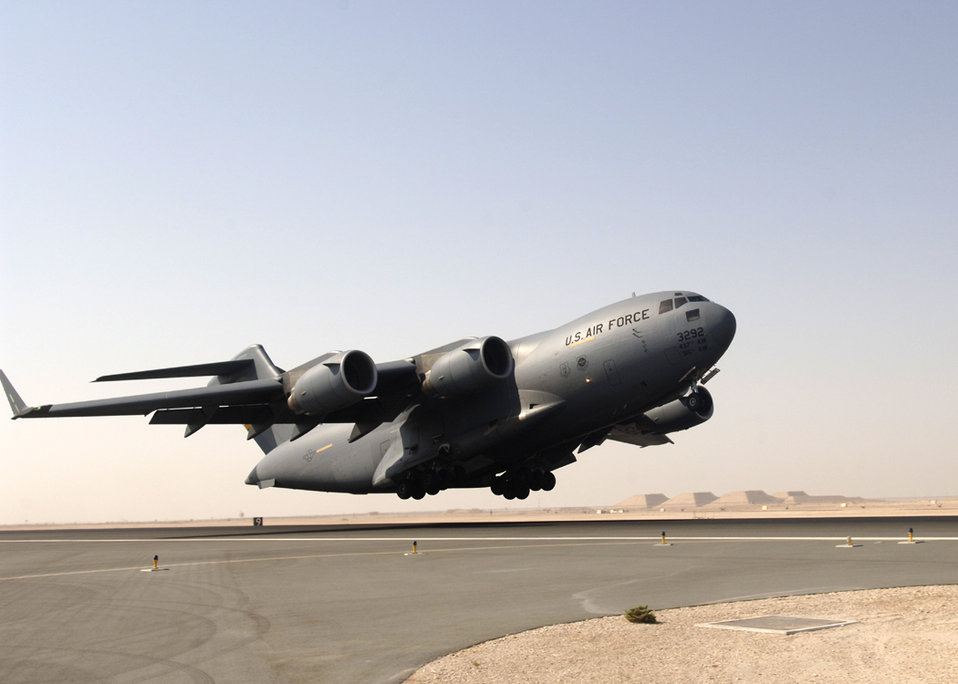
Sept. 6 airpower summary: C:17s deliver the goods

A C-17 Globemaster III takes off from a base in Southwest Asia. Coalition C-17s and C-130s flew 150 sorties and delivered 610 tons of cargo Sept. 6. The equivalent weight delivered is more than the weight of 32 F-16s.